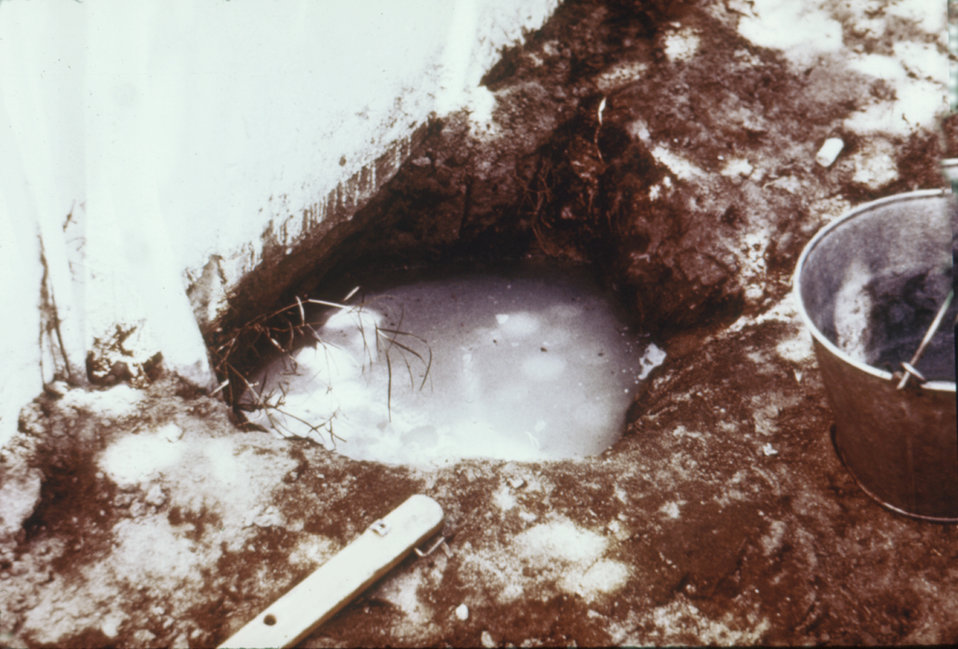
This was part of a series used to familiarize public health inspectors with sanitation conditions in migrant worker camps.